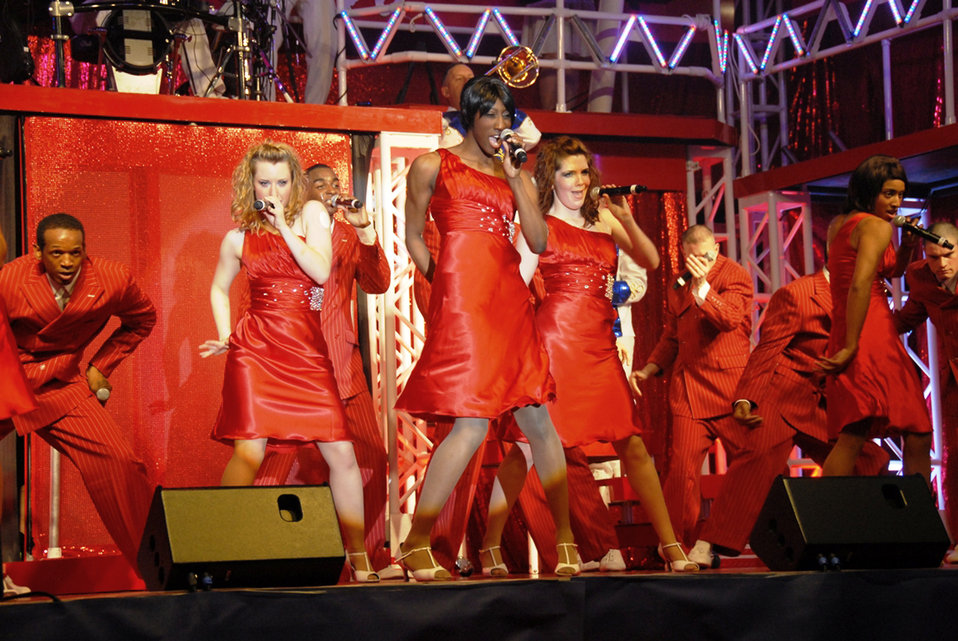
Tops in Blue set to kick off 'Rhythm Nation' tour

Senior Airman Kristina Overton leads a pop song during the group's dress rehearsal May 20 at Kelly Air Force Base, Texas. The 2011 Tops in Blue team is set to kick off their 'Rhythm Nation' tour with a performance May 25, 2011, at Barksdale Air Force Base, La. The show provides a glimpse of a century of popular music and how it grew through new rhythms and technology. Airman Overton is a 2011 Tops in Blue female vocalist. She is a public affairs journeyman from Malmstrom Air Force Base, Mont.